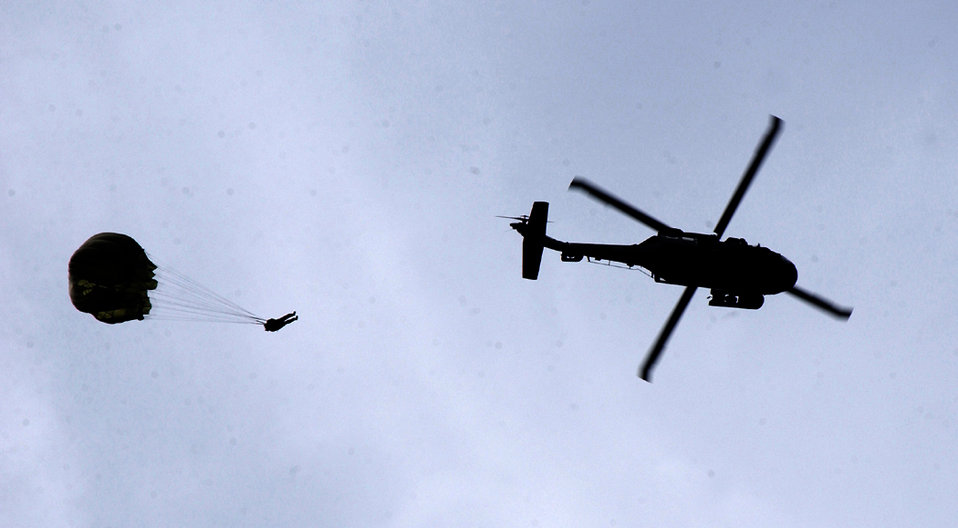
Jumpers ready?

OVER ALASKA -- An Airman assigned to the 3rd Air Support Operations Squadron at Fort Wainwright Army Airfield, Alaska, jumps from a Blackhawk helicopter May 25 during training.